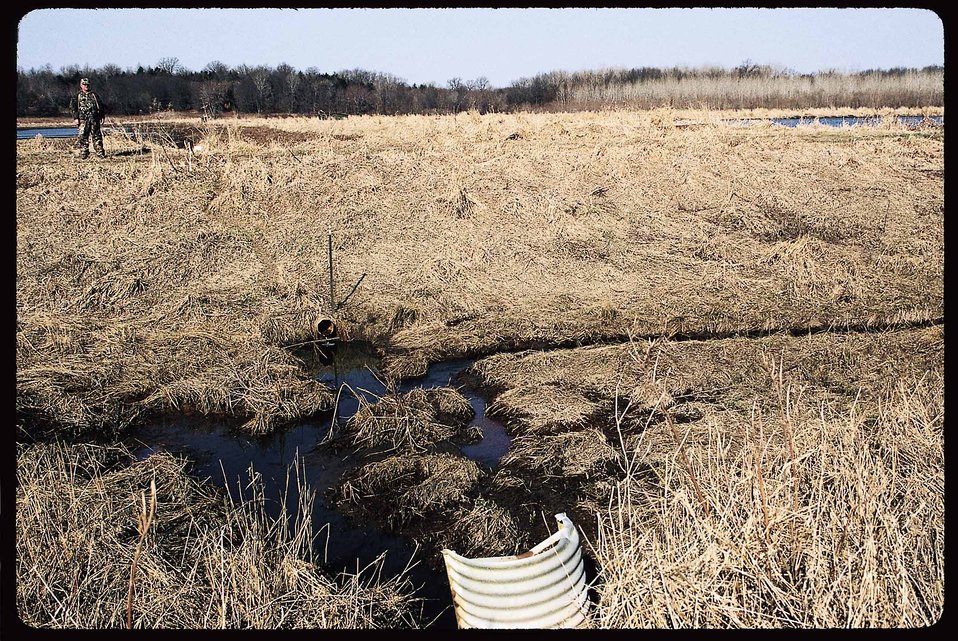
Habitat for ducks and geese on a restored wetland in Van Buren County, Iowa.